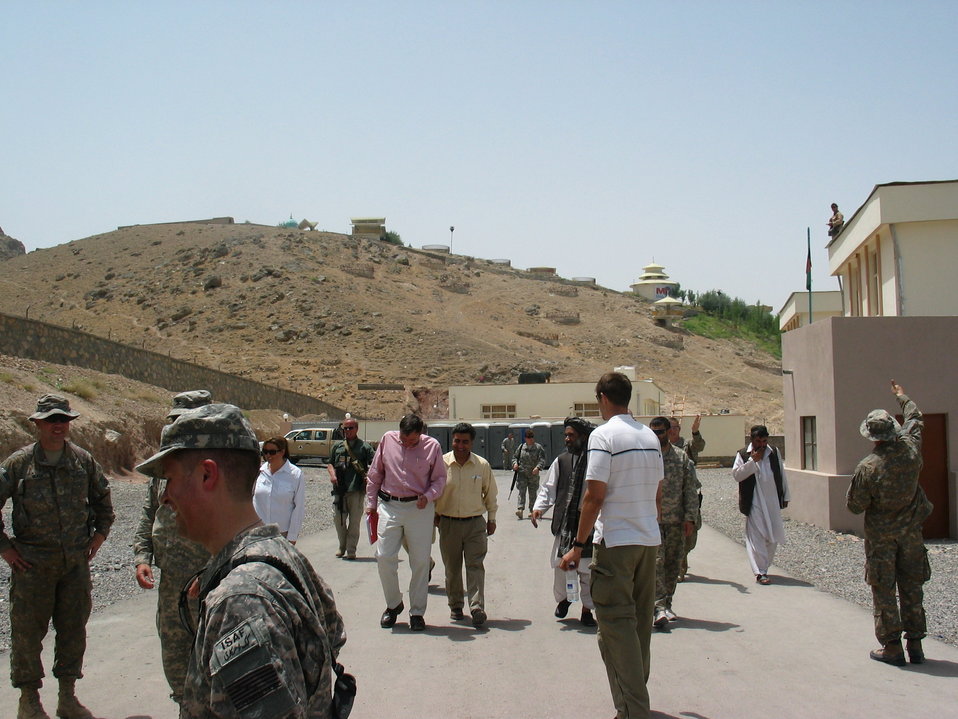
CODEL Berman